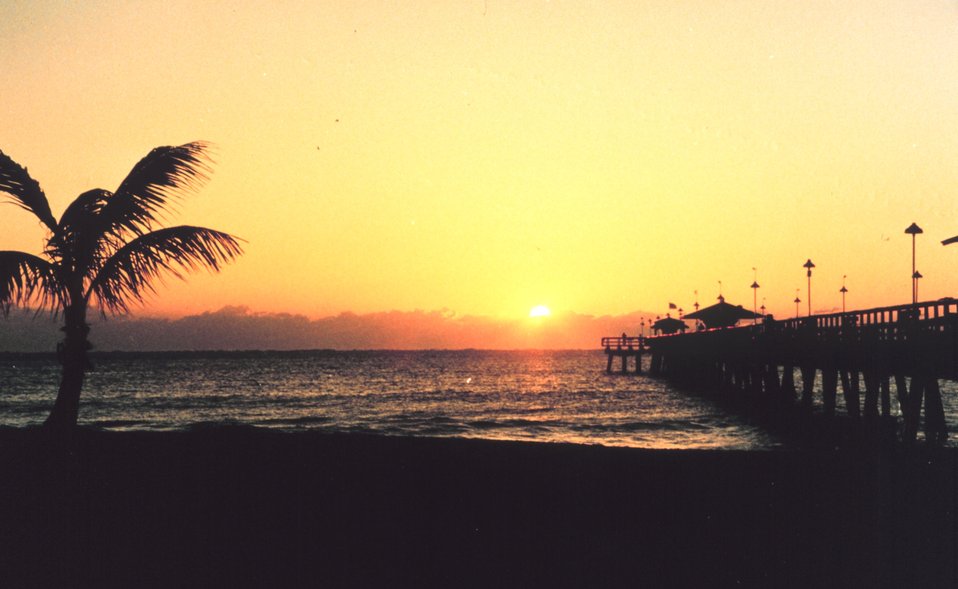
Sunset and fishing pier